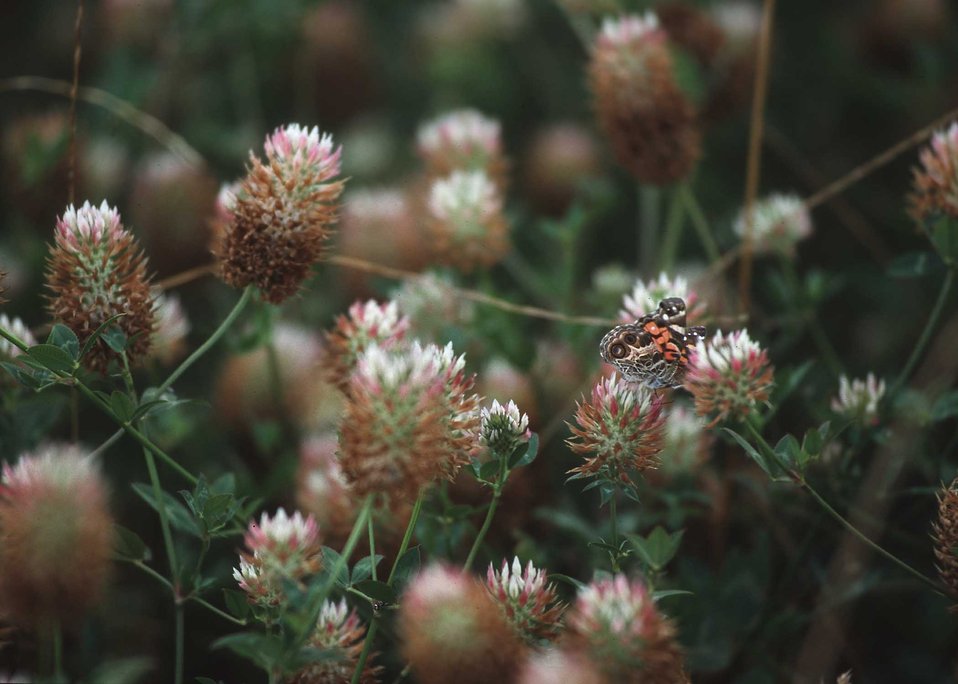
Buttonbush is a shrub or small tree that gets its name from its fragrant ball like cluster of white flowers which bloom May-August. A good source of nectar for butterflies and seeds for ducks and deer.